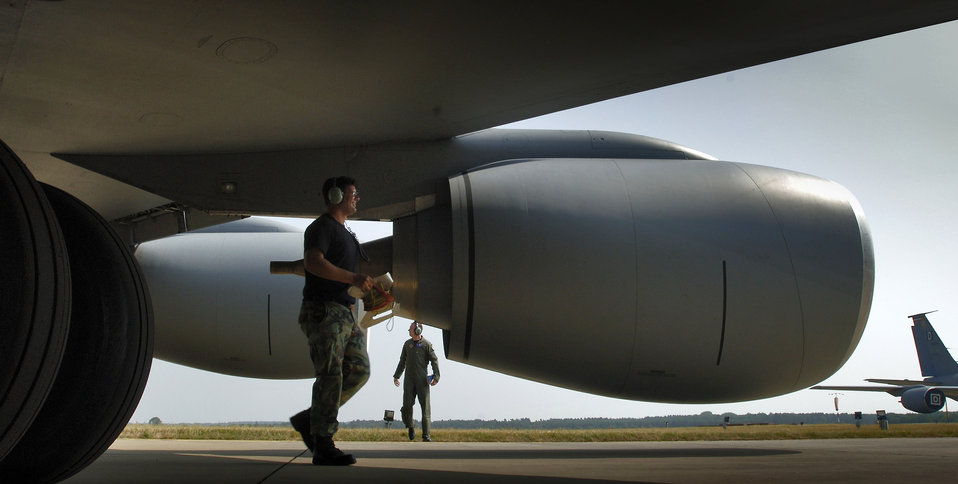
Long days, flexibility part of tanker crew's life

Airman 1st Class Justin Lucci (left) and Capt. Rob Kline do a walk-around inspection of a KC-135 Stratotanker at Royal Air Force Mildenhall, England, on July 25. The Airman is a crew chief with the 100th Maintenance Group. Crew chiefs work 12-hour shifts to keep their fleet of 15 tankers flying. Captain Kline and his crew refueled six Belgian F-16 Fighting Falcons over the North Sea participating in exercise Wycombe Warrior.